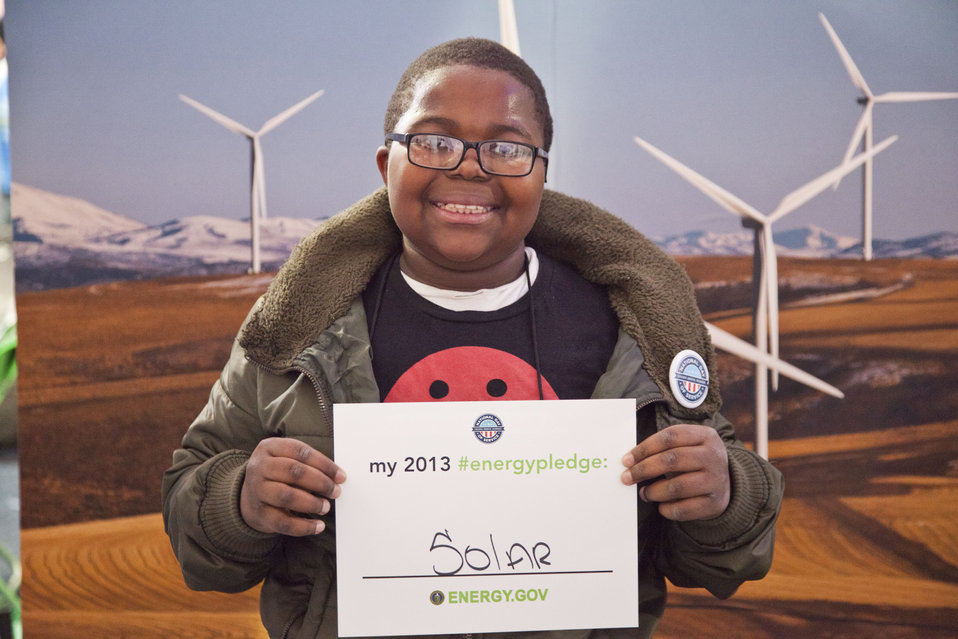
What's your #energypledge?